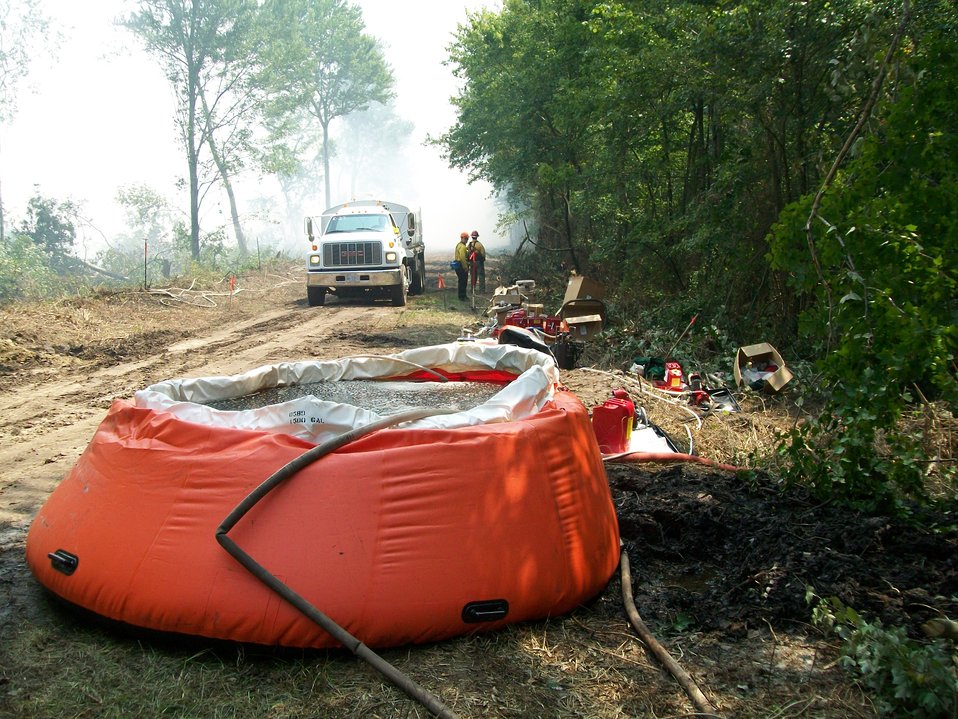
Pumpkin filling

Suffolk, VA, Aug. 2011: Firefighters fill a temporary water tank, often called a pumpkin at the Lateral West Fire on Great Dismal Swamp National Wildlife Refuge.